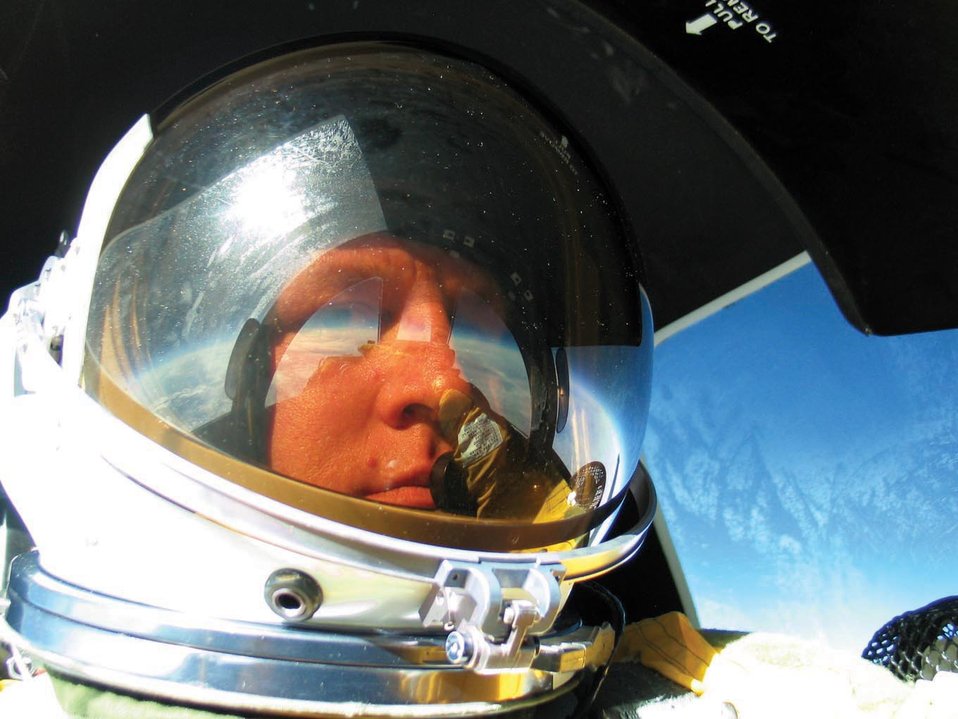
Palmdale detachment takes testing to new heights

Col. Chris Cook flies at 71,000 feet over California in a U-2 Dragon Lady during a recent mission. Colonel Cook is the 412th Operations Group commander at Edwards Air Force Base, Calif.